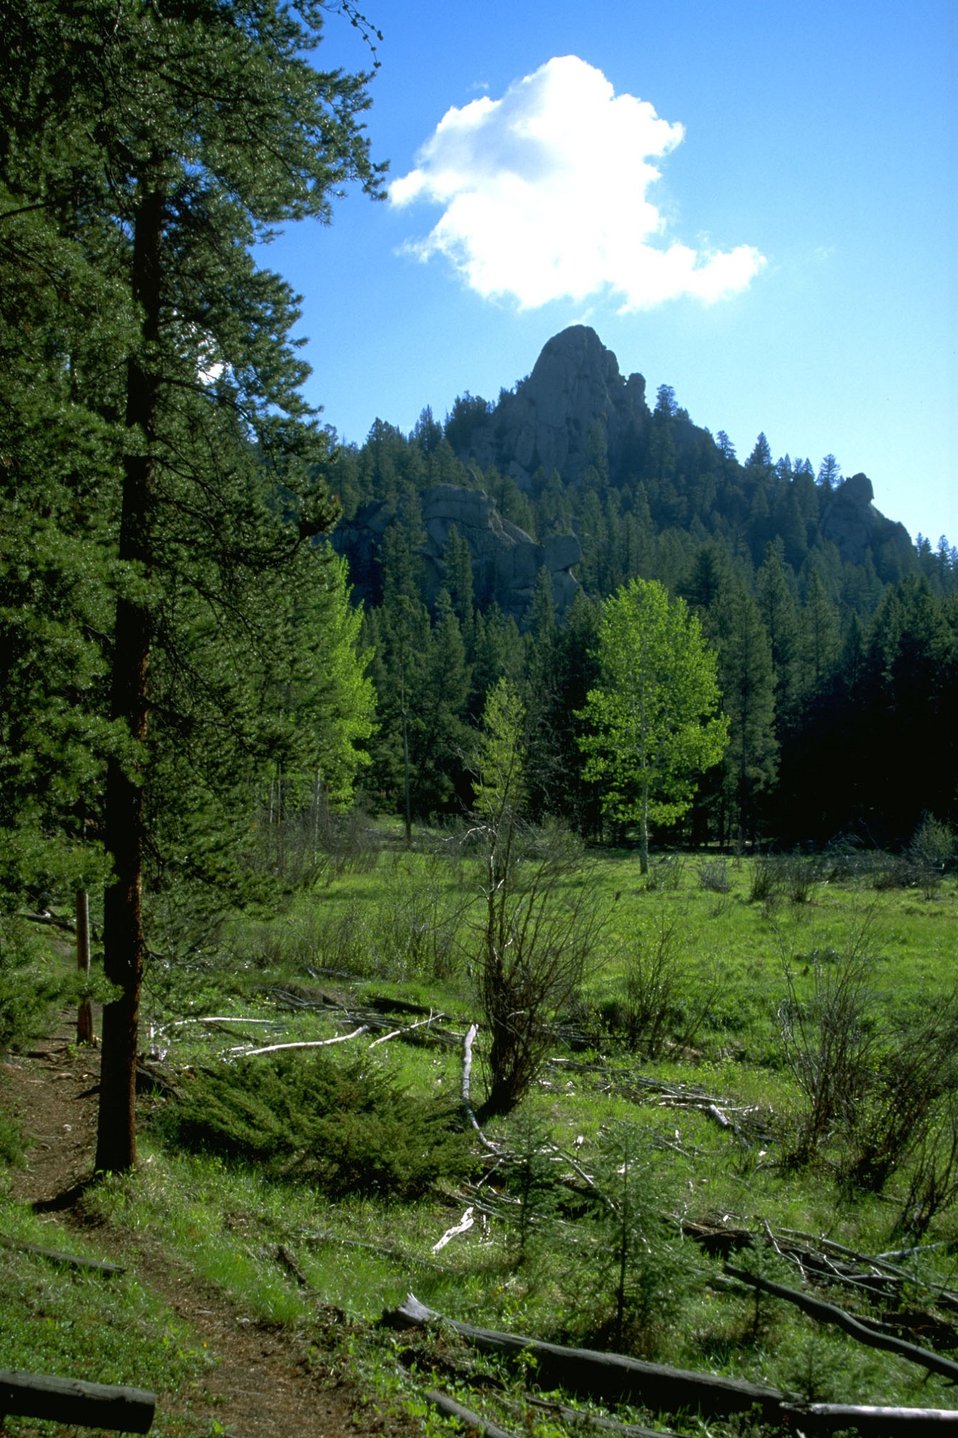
A cloud crowning a rock formation above a grassy meadow in the Wilderness Study Area (WSA)